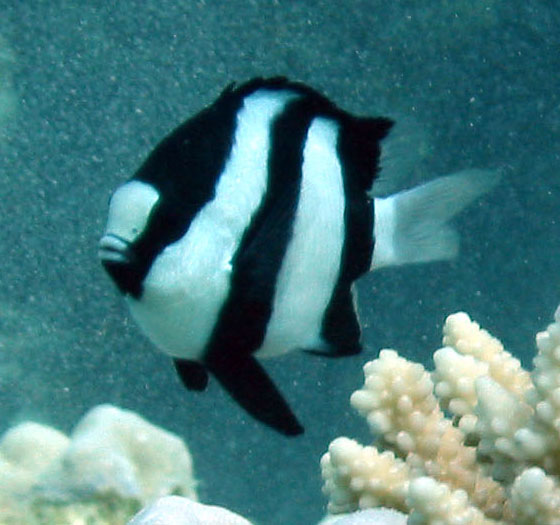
Alan Slater en:Category:Pomacentrid images